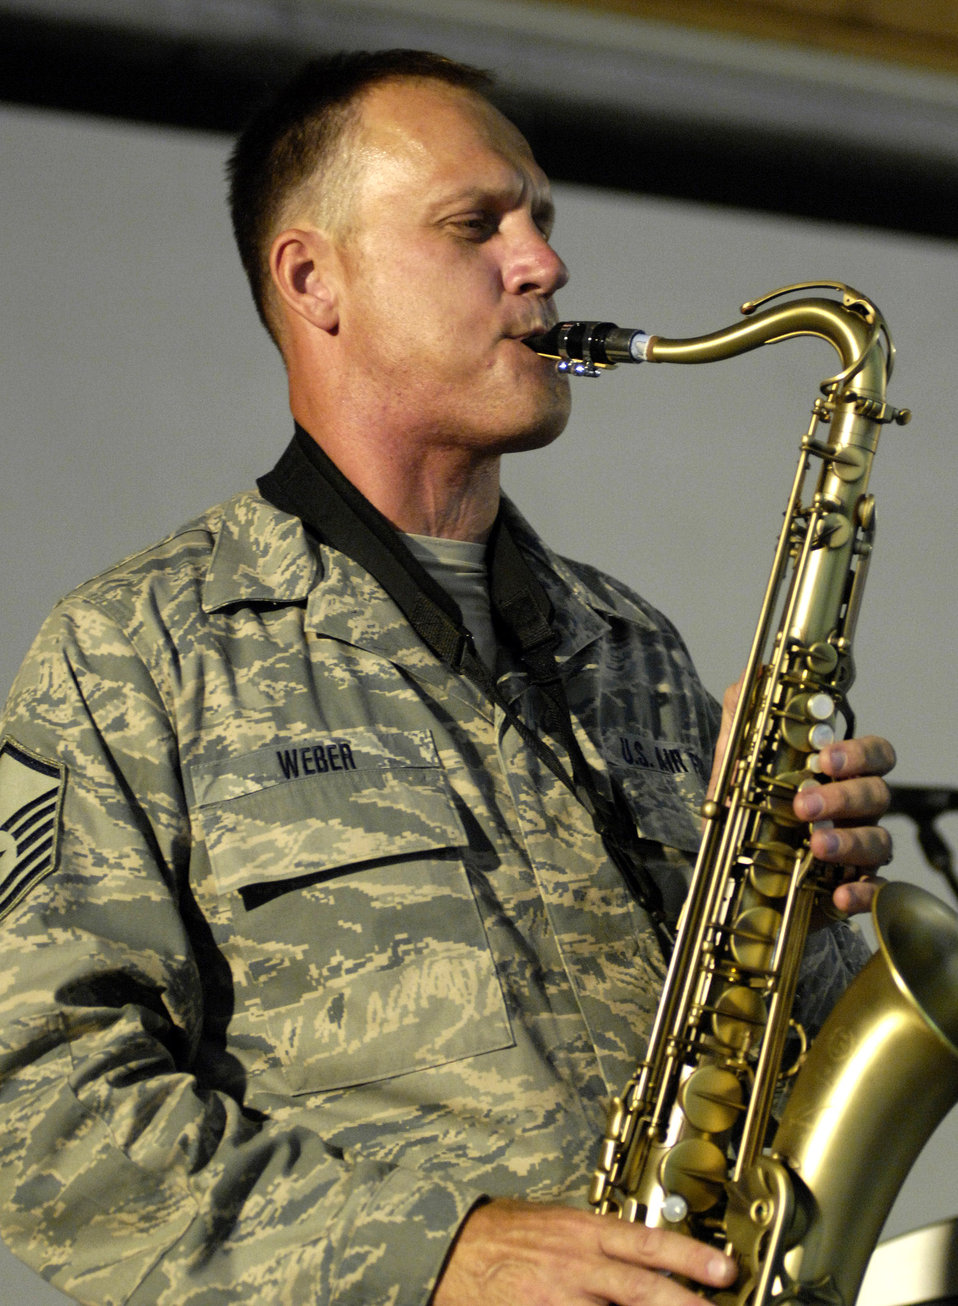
'Falcon' lands in Afghanistan

Master Sgt. Daniel Weber plays a solo during a show June 22 at Bagram Air Base, Afghanistan. The U.S. Air Forces Central Band